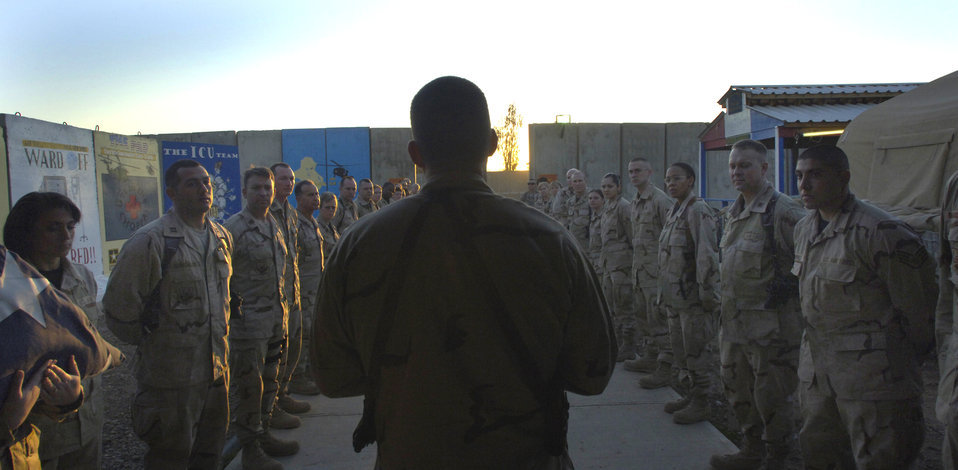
Hero's Highway begins in Iraq

Col. Brian Masterson speaks to deployed Airmen about the accomplishments of the 332nd Expeditionary Medical Group prior to unfolding an American flag at the Hero's Highway Ceremony Jan. 22 at Balad Air Base, Iraq. The flag is posted on the inner roof a tent so injured troops can look up and know they are in an American area when brought in on litters seeking medical treatment. The medical group raised injured troops' survival rate to 98 percent. Colonel Masterson is assigned to the 332nd EMG.